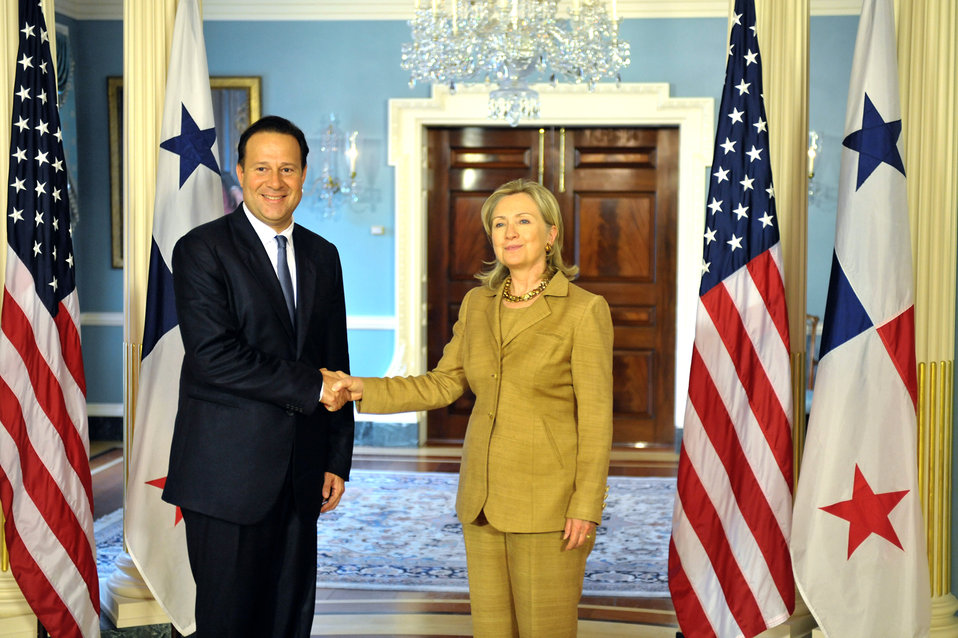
Secretary Clinton Shakes Hands With Panamanian Vice President and Foreign Minister Varela

U.S. Secretary of State Hillary Rodham Clinton shakes hands with Vice President and Foreign Minister of Panama Juan Carlos Varela after their bilateral meeting at the U.S. Department of State in Washington, D.C., September 30, 2010.